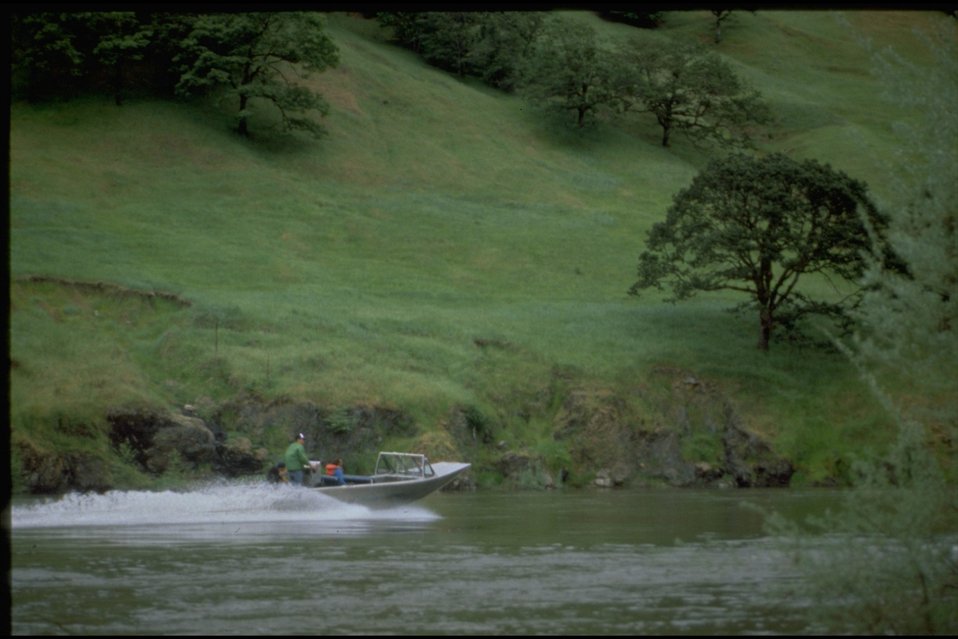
Rogue River - Ditch Creek/Battle Bar wild section. Jet Boat.